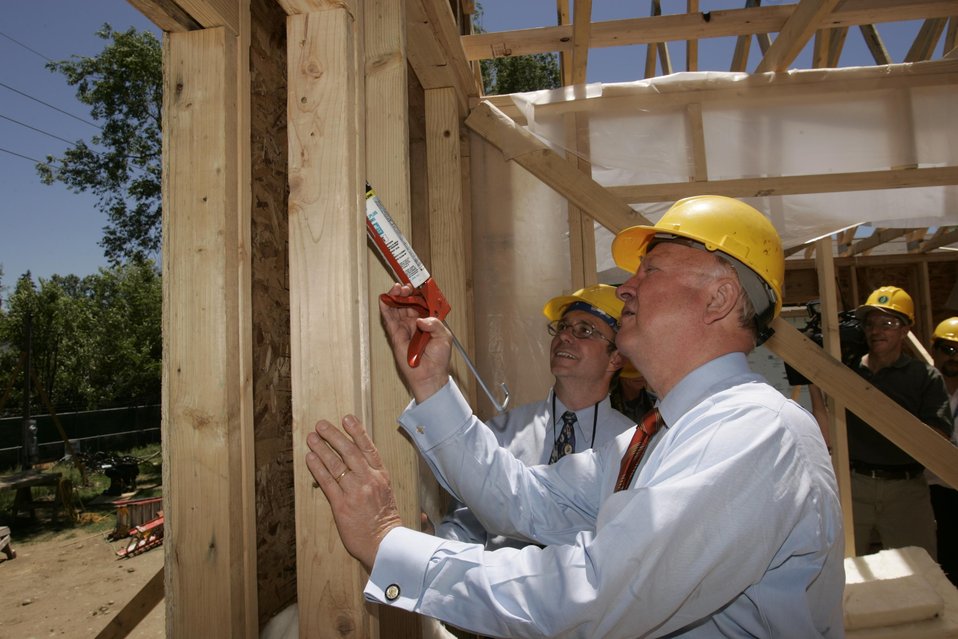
SECRETARY OF ENERGY SAMUEL BODMAN ASSISTED IN THE CONSTRUCTION OF NREL'S 2005 HABITAT FOR HUMANITY HOUSE.

NREL'S BUILDINGS ENGINEER PAUL TORCELLINI GUIDED SECRETARY BODMAN THROUGH A TOUR OF THE NATIONAL RENEWABLE ENERGY LABORATORY'S HABITAT FOR HUMANITY HOUSE DURING A VISIT TO THE SITE, JUNE 13, 2005. EACH HOUSE BUILT BY HABITAT FOR HUMANITY OF METRO DENVER INCLUDES ENERGY EFFICIENT APPLICANCES, COMPACT FLUORESCENT LIGHTS, PROGRAMMABLE THRERMOSTATS AND INSULATED WINDOWS.